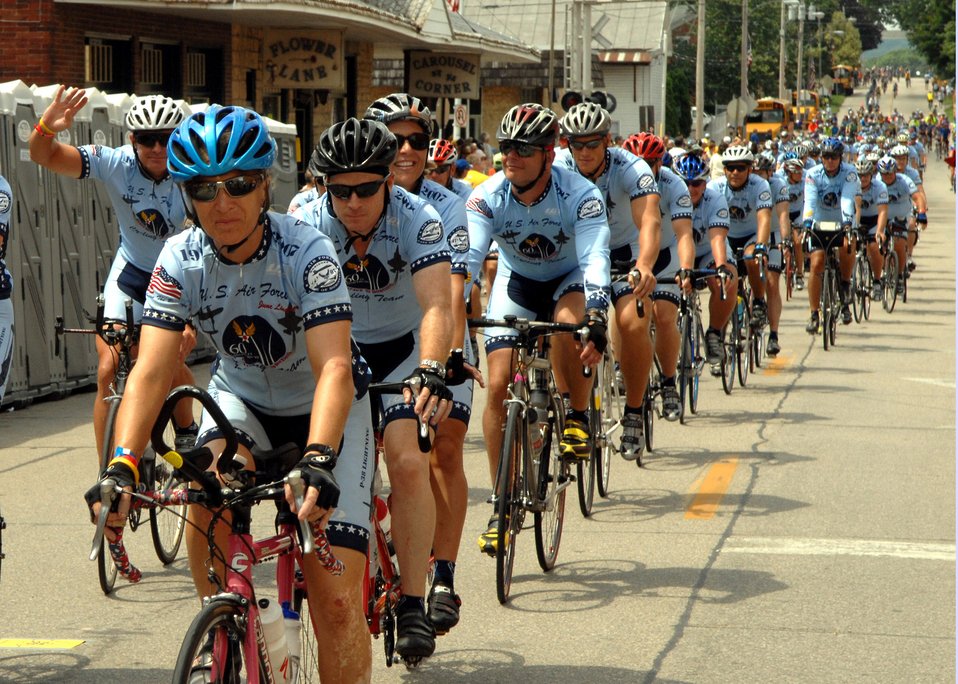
Air Force team a large presence in annual bike ride

Members of the Air Force Cycling Team ride into Bellevue, Iowa, as they complete the Des Moines Register's Annual Great Bicycle Ride Across Iowa, or RAGBRAI, July 28. The 148 Air Force team members completed seven days of riding, maintaining an average of 70 miles a day, across the state of Iowa to support recruiting efforts and to show Airmen as being fit to fight.